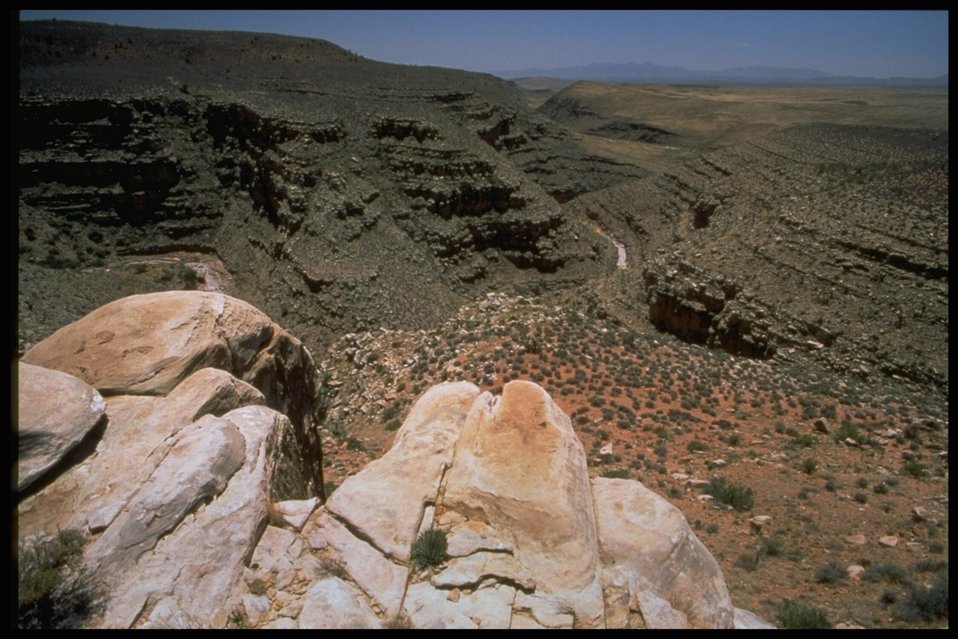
A bueatiful canyon over look with a nice desert landscape.